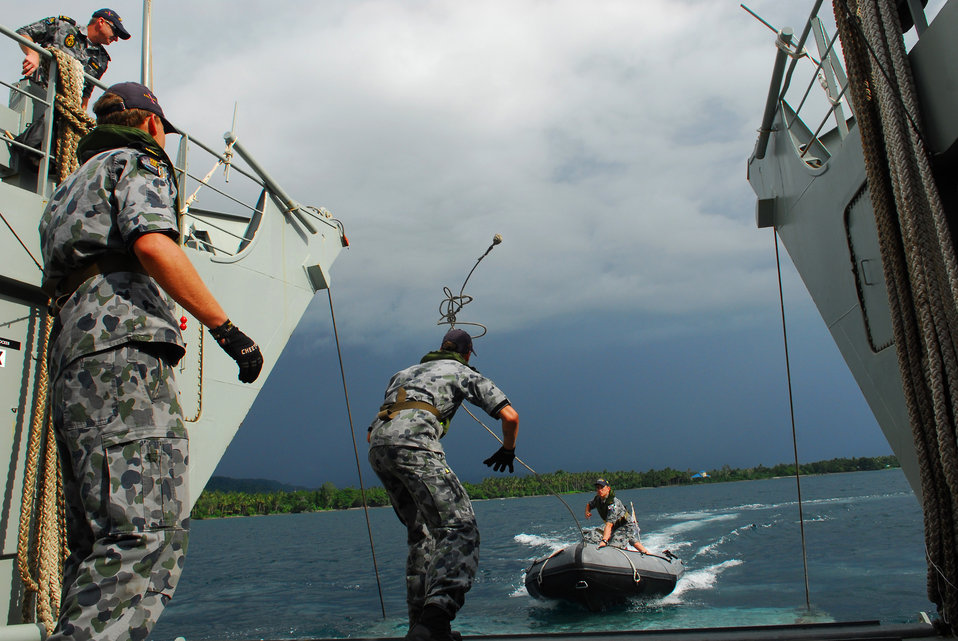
An Australian Royal Navy Sailor throws a line to Sailors aboard Her Majesty Australian Ship (HMAS) Labuan (L128) while visitors from The Military Sealift Command hospital ship USNS Mercy (T-AH 19) tour the ship in Sofifi, Indonesia, on July 20, 2010. Mercy is in the North Maluku Islands conducting Pacific Partnership 2010, the fifth in a series of annual U.S. Pacific Fleet endeavors conducted in Indonesia as a disaster relief exercise aimed at strengthening regional partnerships.